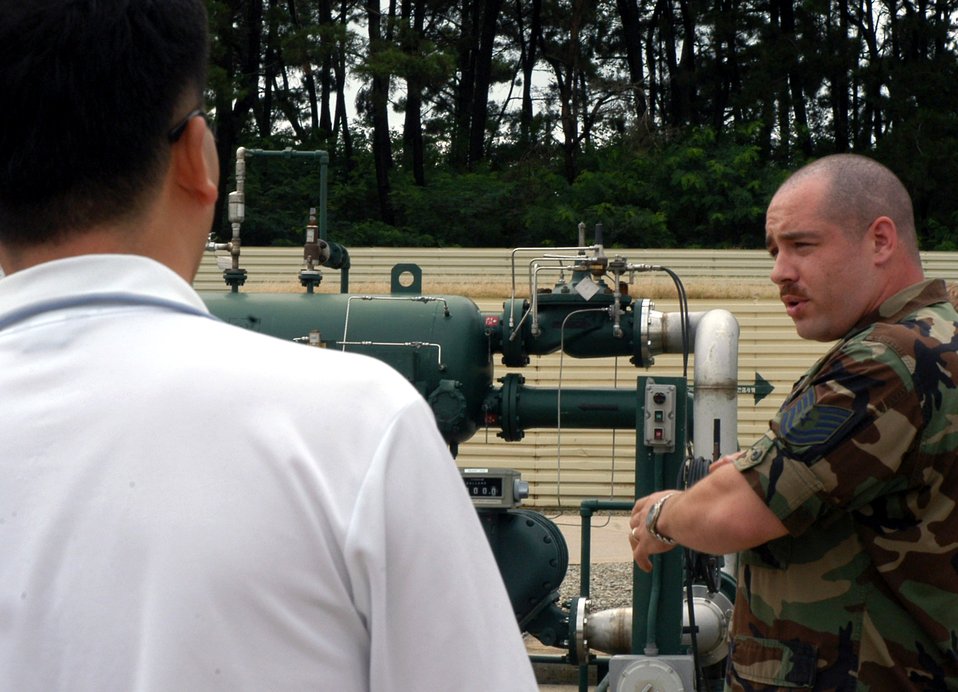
Kunsan officials hold environmental orientation

Tech. Sgt. Timothy Willis briefs Gunsan City officials on how base fuel systems work Aug. 29 at Kunsan Air Base, South Korea. The purpose of the tour was to educate local community city officials on the base's mission and environmental awareness. Sergeant Willis is the 8th Civil Engineer Squadron NCO in charge of liquid fuels.